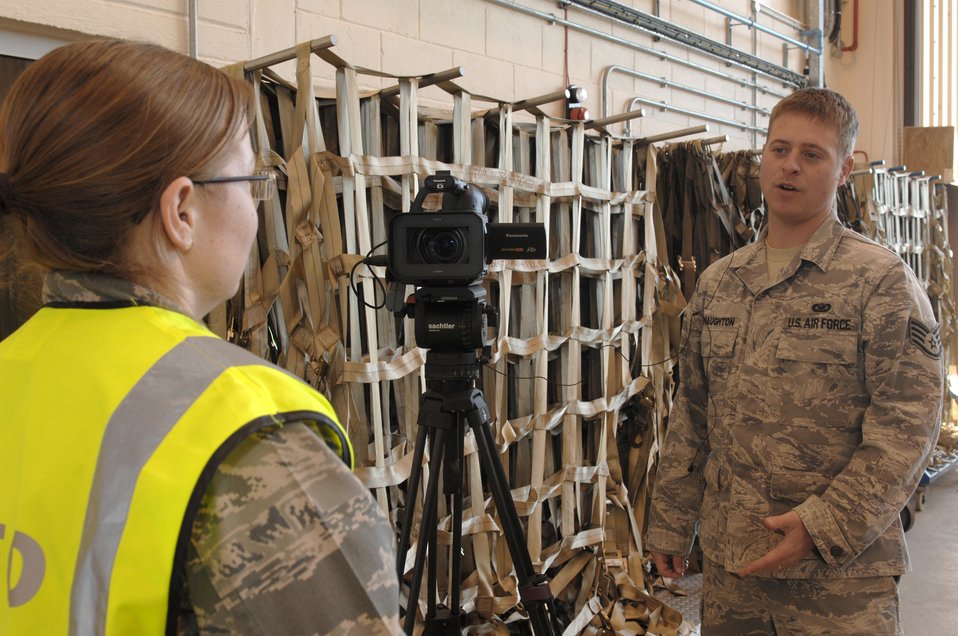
Odyssey Dawn

Staff Sgt. Nicholas McNaughton, 48th Fighter Wing, public affairs broadcaster interviews 2nd Lt. Amanda Hatesohl, 48th Logistics Readiness Squadron, deployment distribution flight commander, during deploment processing at RAF Lakenheath, England, March 19, 2011. Units from the 48th Fighter Wing are currently conducting pre-deployment procedures in support of Operation Odyssey Dawn. The 48th Fighter Wing provides all-weather, day or night air superiority and air-to-ground precision combat capability as well as combat search and rescue.